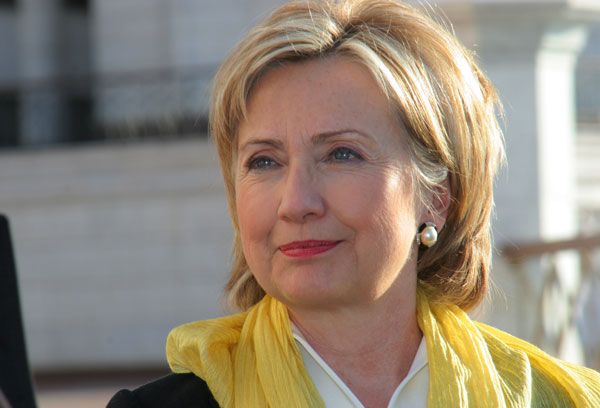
Secretary Clinton Outside the Kul Sharif Mosque

U.S. Secretary of State Hillary Rodham Clinton in Kazan, Russia, October 14, 2009.